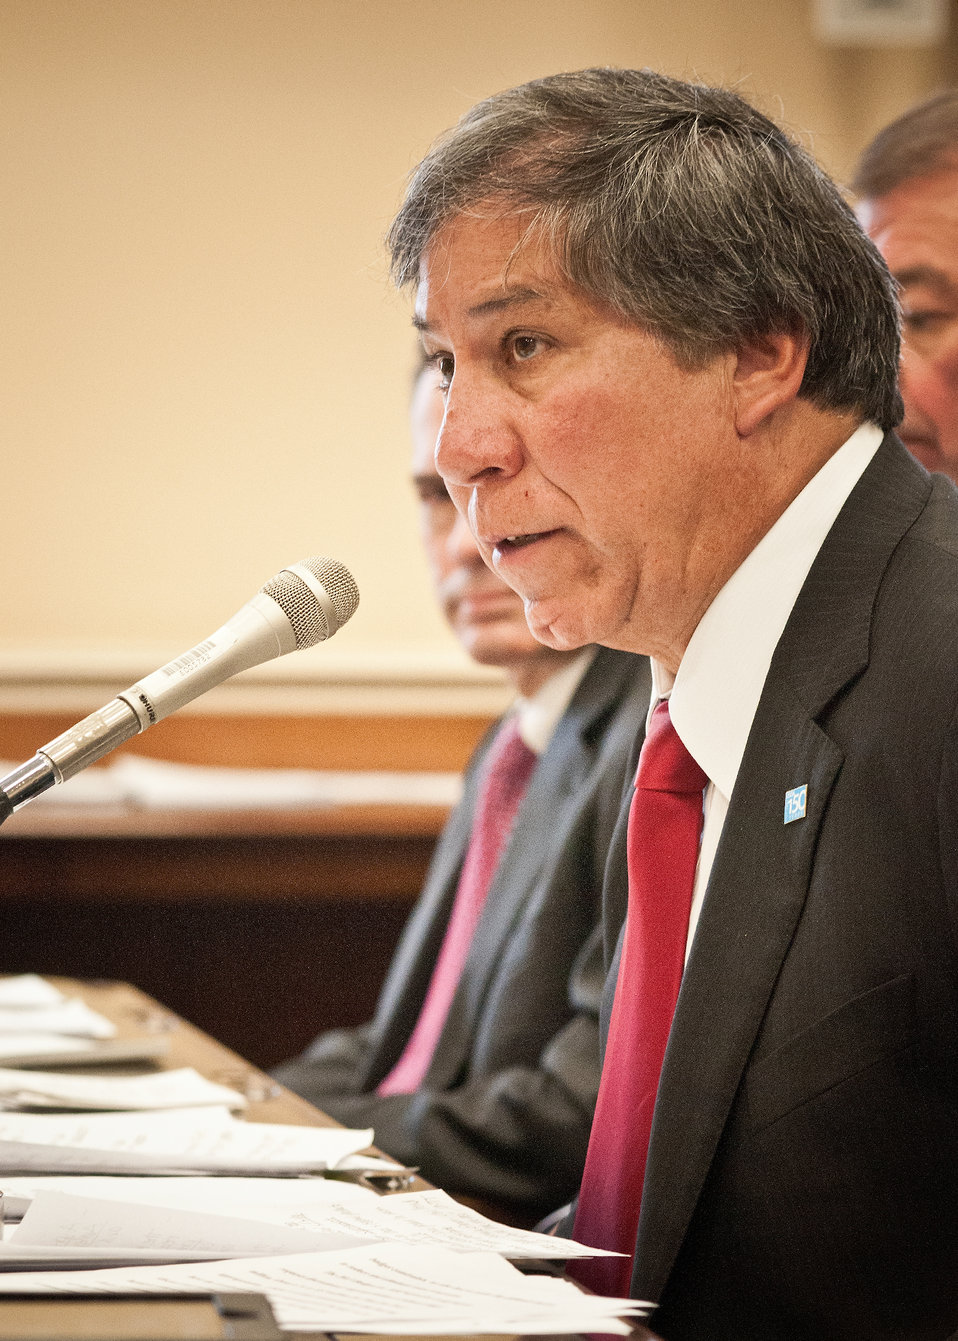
Ed Avalos, Under Secretary, Marketing and Regulatory Programs answers questions posed by members of the House Agriculture Appropriations Subcommittee while testifying on Capitol Hill with representatives of the Marketing and Regulatory Program agencies on their fiscal year 2013 budget requests in Washington, D.C., Tuesday, March 6, 2012.